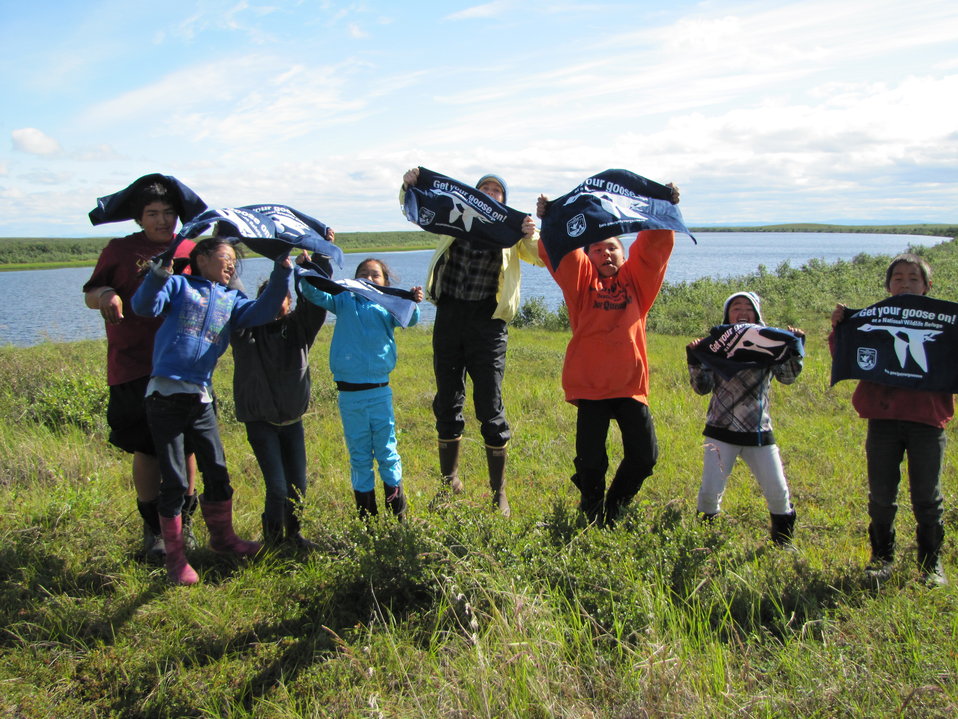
Get Your Goose On!

Get your Goose On goes aerial as the group jumps for joy on the tundra banks of the Selawik River.